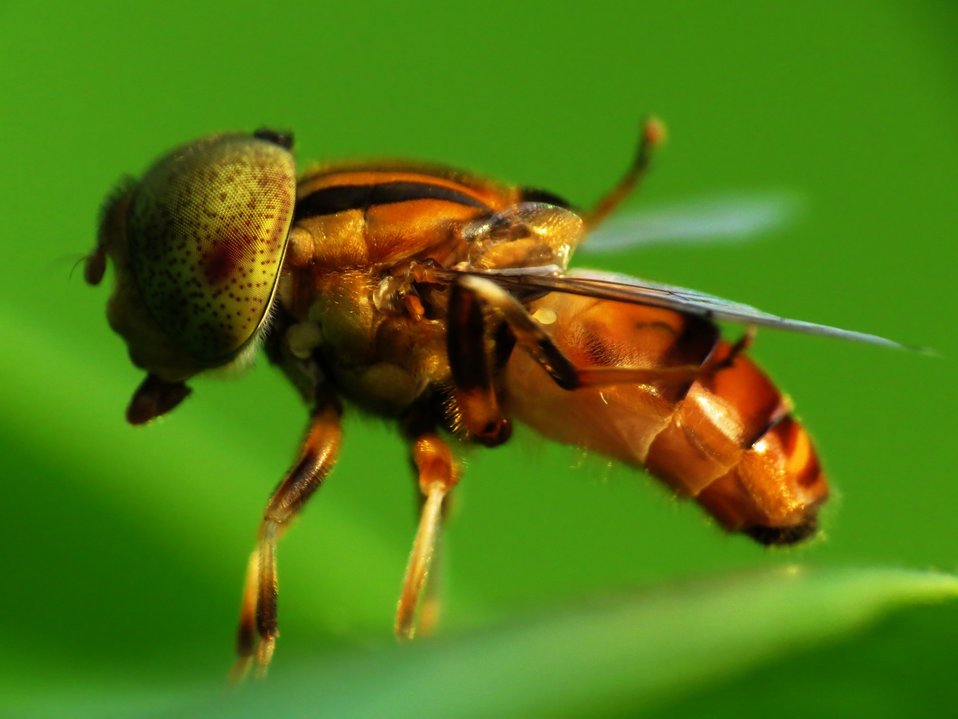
Close up yellow fly on a leaf

Beautiful yellow fly with long tongue alighted on the green leaf in action.